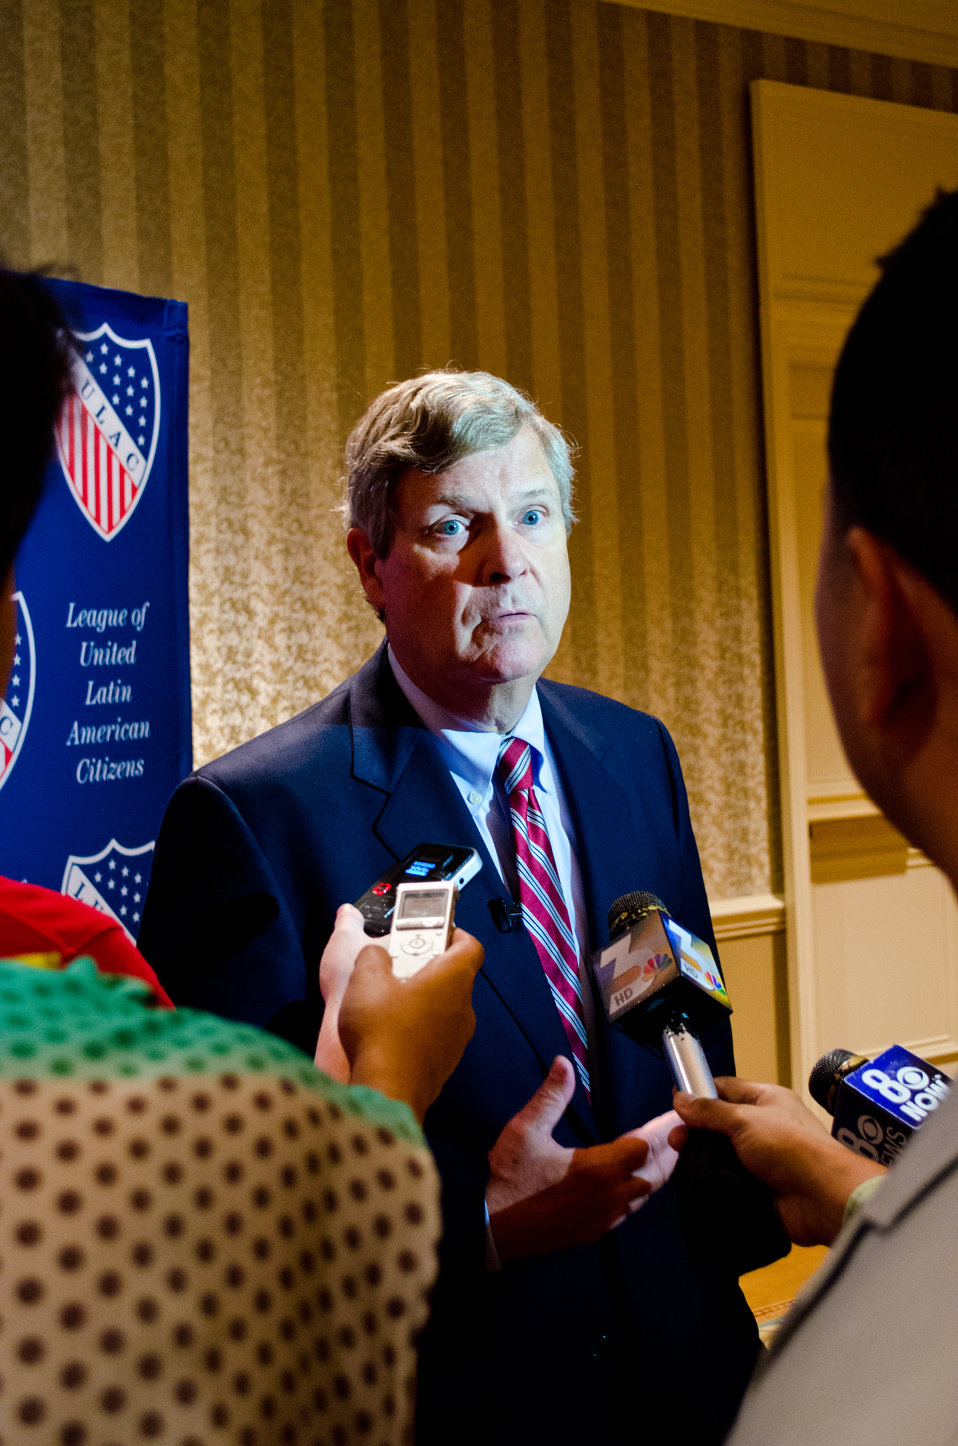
Agriculture Secretary Tom Vilsack speaks with the media at the 84th Annual League of United Latin American Citizens (LULAC) National Convention and Exposition in Las Vegas, NV on Wednesday, Jun. 20, 2013.